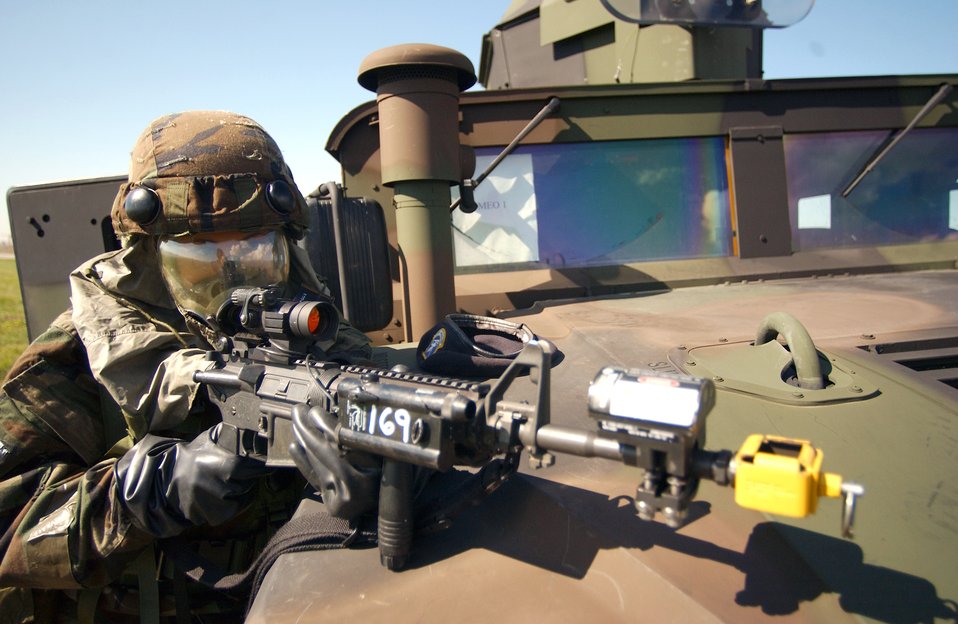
Airmen defend base during exercise

Senior Airman Stephanie Graciak provides security during a scenario for a Local Salty Nation exercise at Aviano Air Base, Italy, on Wednesday, June 7, 2006. The exercise was conducted June 5 to 9. Airman Graciak is assigned to the 31st Security Forces Squadron.